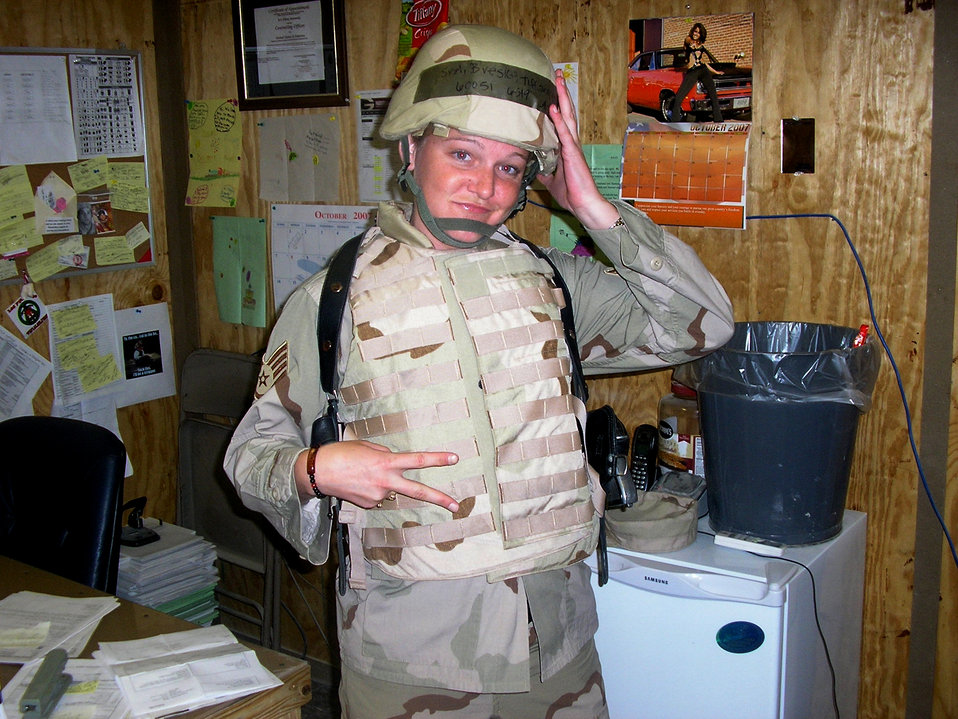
Tiffany Breske, a Contracting Officer in Region 3, served in the Air Force as a Contract Specialist/Contracting Officer from August 2000 to October 2008, with several deployments in Afghanistan.